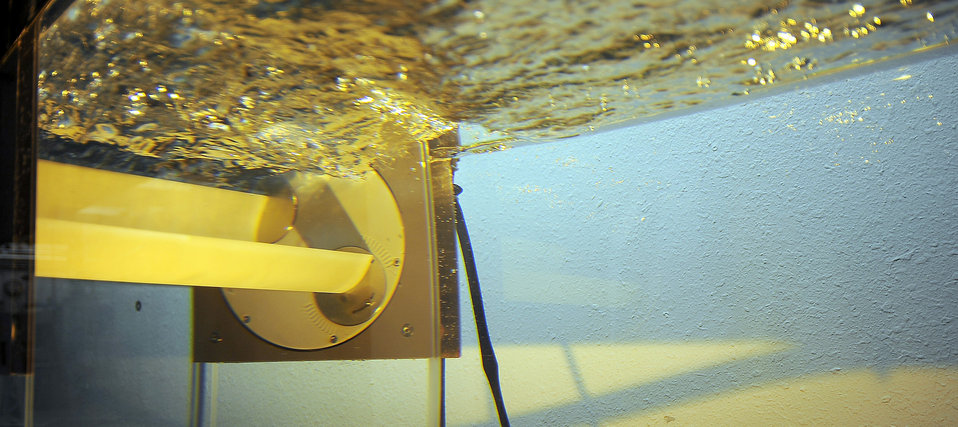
Aero lab harnesses wave energy in simulation research

A wave energy converter generates power in a tank Jan. 27, 2010, at the Air Force Academy, Colo. The converter was designed by department of aeronautics researchers Dr. Stefan Siegel and Jurgen Seidel.